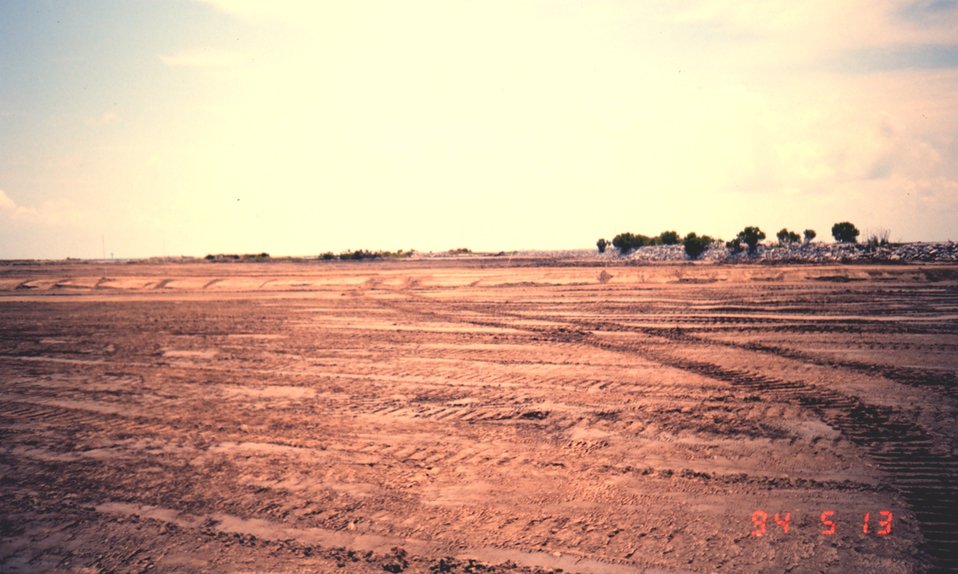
New land created by dredging operation will be planted with Spartina alterniflora, smooth cordgrass.